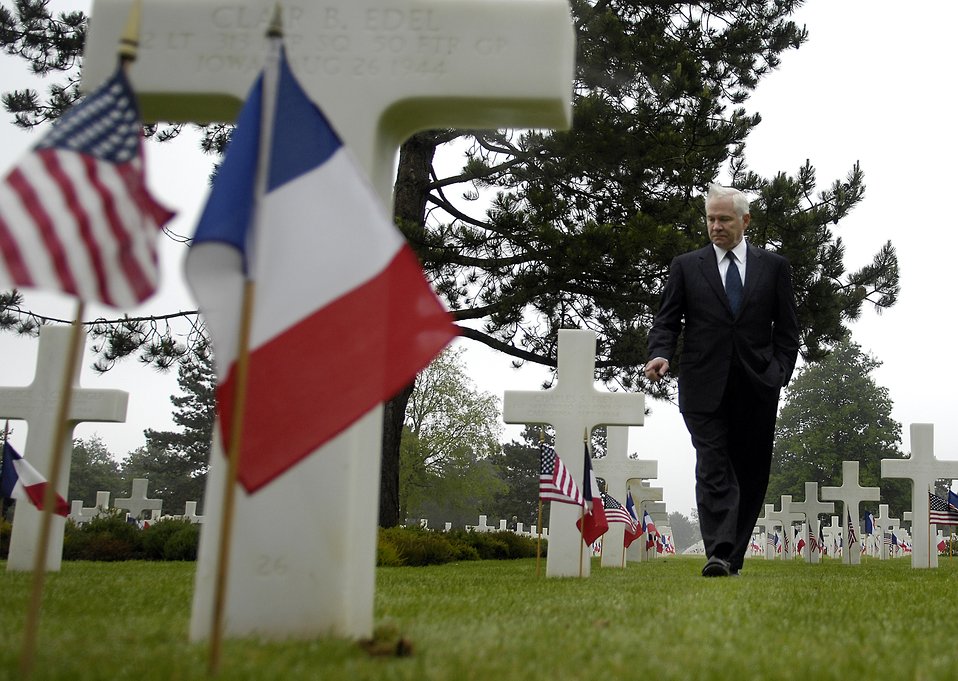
Defense secretary, servicemembers reflect on D-Day heroism

Secretary of Defense Robert M. Gates tours the American Cemetery during the 63rd Anniversary of D-Day June 6 in Normandy, France.